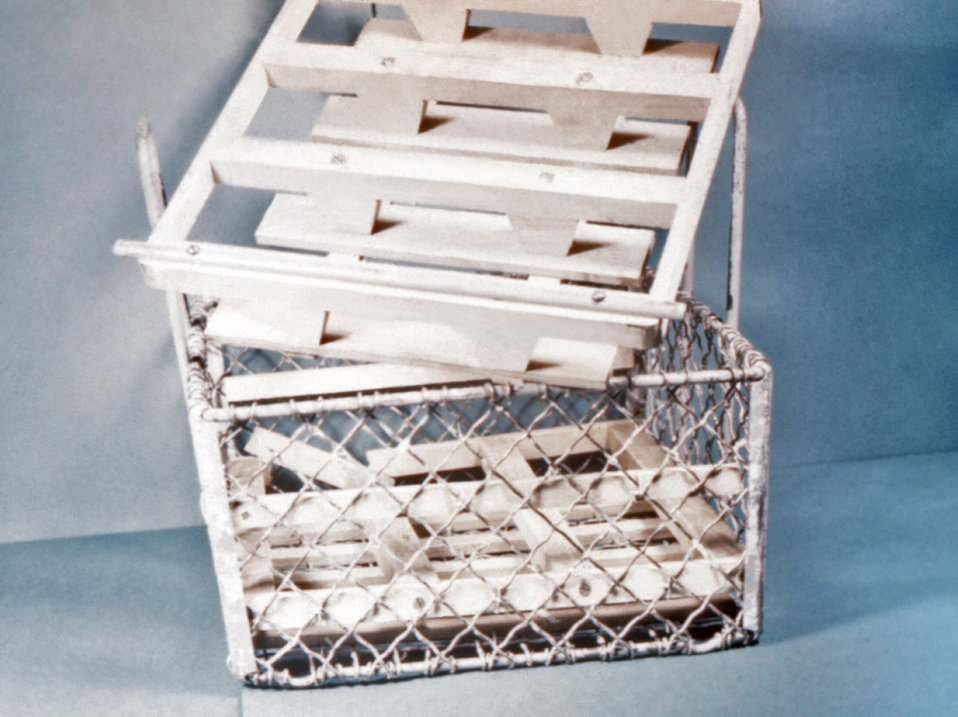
This image, taken sometime in the 1950s, depicted a dip basket that was used for the washing of restaurant utensils. The apparatus was an advance in sanitation because it made the washing, rinsing, and sterilization of utensils possible without the sanitizer's hands coming into contact with the implements. This image was part of a Minnesota Health Department campaign to promote safe food handling, and to prevent food-borne illnesses.